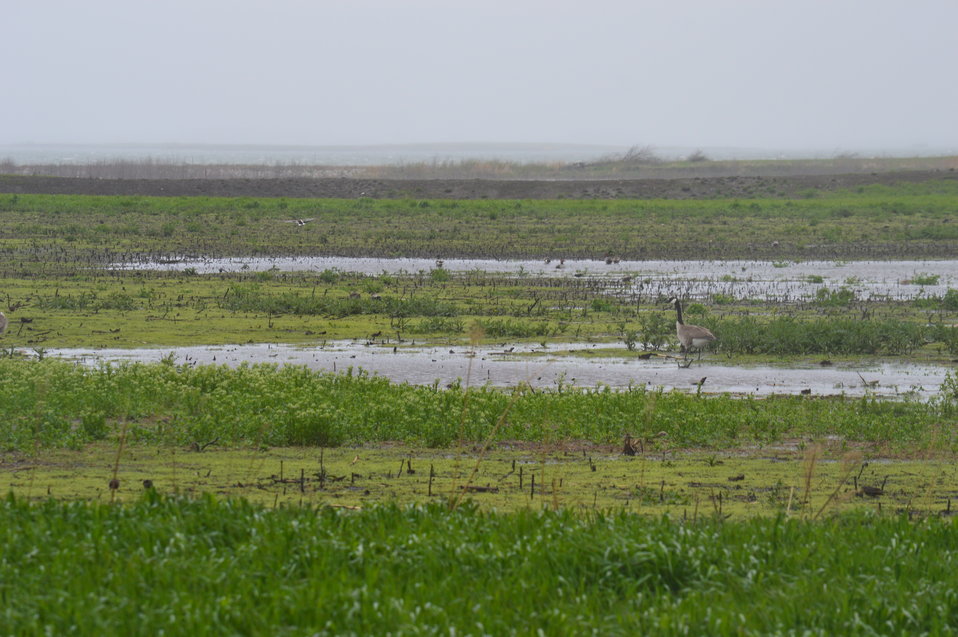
Wetlands in Audubon NWR

Scenery and wildlife and Audubon National Wildlife Refuge in North Dakota.